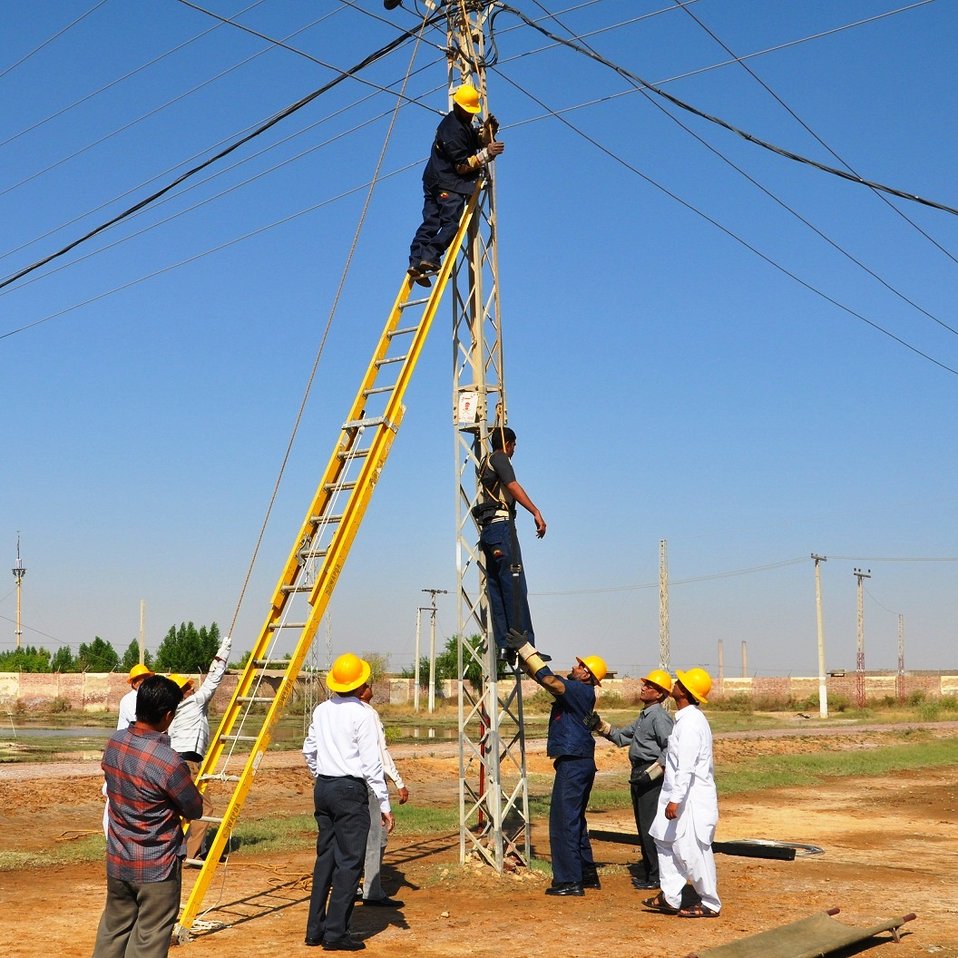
Quick Impact Lineman Safety Training Program

A three day Training of Trainers for launching the 'Quick Impact Lineman Safety Training Program' kicked off on 25 October 2011 at HESCO's Regional Training Center (RTC). Nine trainers including 3 Sub-Divisional Officers (SDOs), 3 Line Superintendents and 3 linemen received training on best safety practices. The mainstream training will start on 28 November for 620 linemen and line superintendents and 62 SDOs in HESCO RTC. The effort will be replicated in the remaining DISCOs and a total of 9,600 linemen/line superintendents and 960 SDOs will be trained. The effort was initiated because, on average, 165 DISCO personnel suffer due to fatal accidents each year due to lapses in safety practices or equipment as they perform their duties.